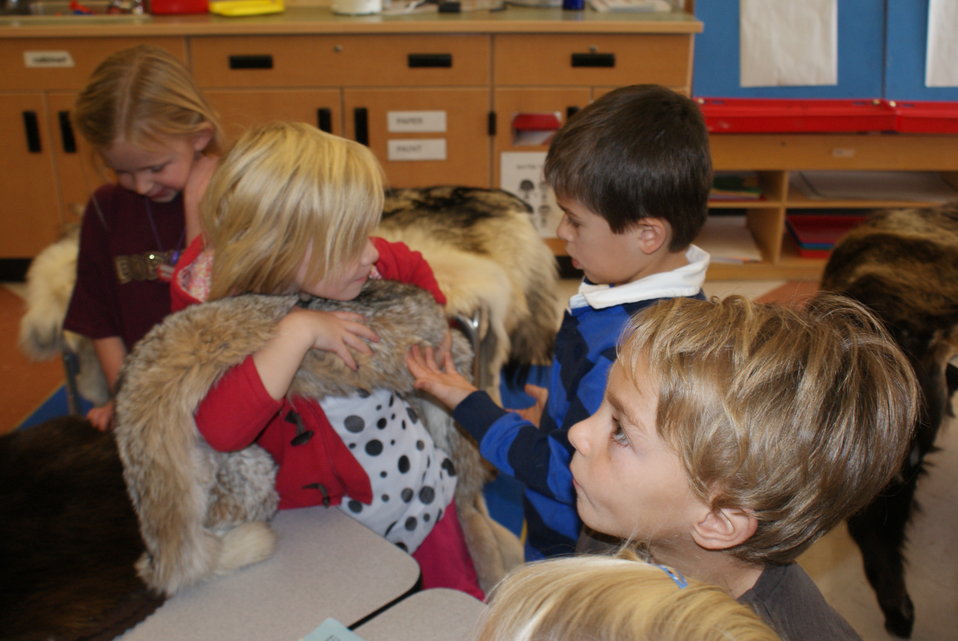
Scientists in the Community Program

U.S. Fish and Wildlife Service Mountain-Prairie Region Deputy ARD for External Affairs, Matt Kales, introduces early childhood education students at William Roberts Elementary School in Denver to some of Colorado's native and historic wildlife species.